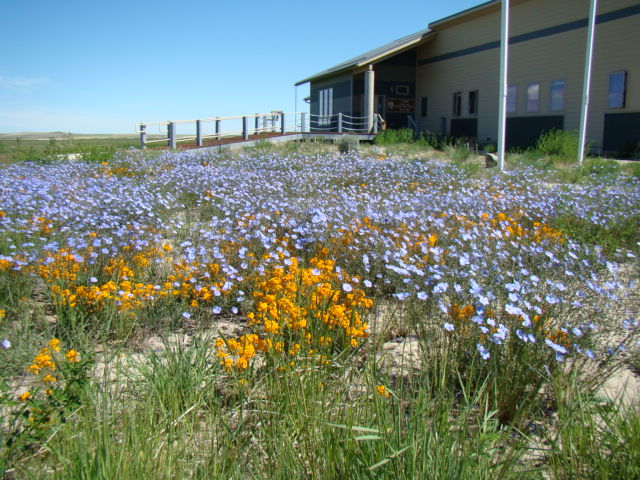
Benton Lake Visitor Center

Beautiful wildflowers bloom every spring outside of the Visitor Center.